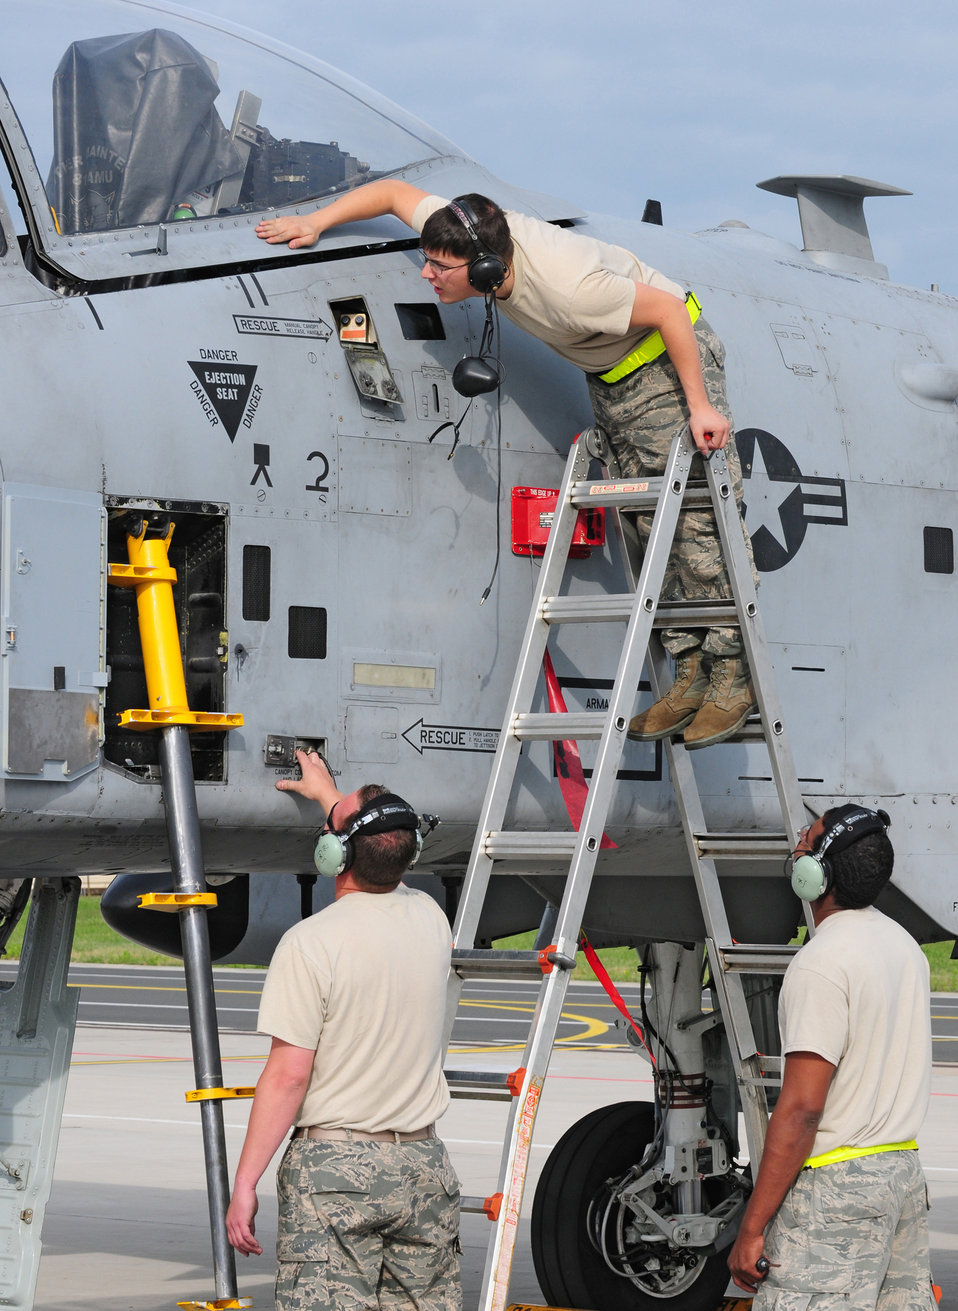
Teamwork

Staff Sgt. Wesley Britt (left), Senior Airman William Jones and Senior Airman Justin Vesely (above) work together to solve a problem with the canopy of an A-10 Thunderbolt II June 16, 2011, at Spangdahlem Air Base, Germany. The three Airmen are assigned to the 52nd Aircraft Maintenance Squadron.